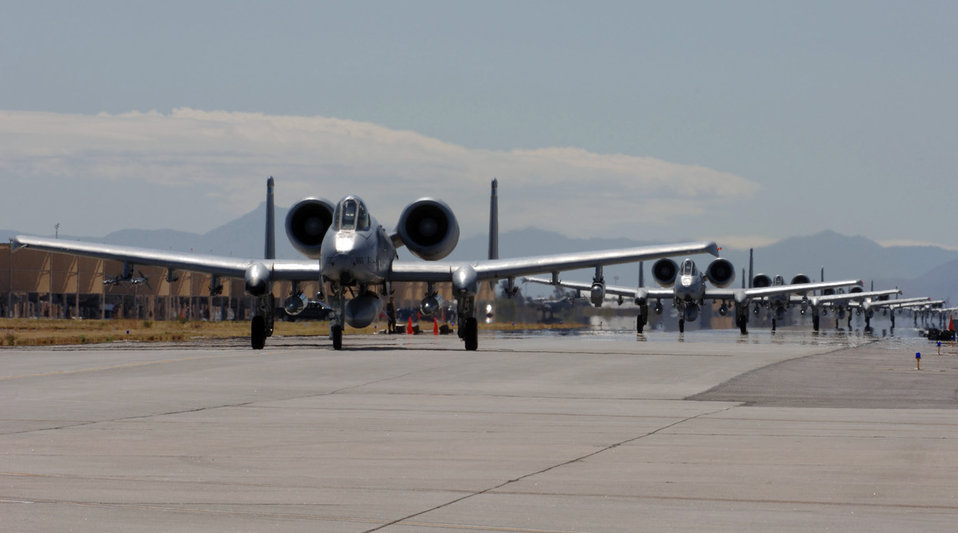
Exercise Bushwacker 06-02

A-10 Thunderbolt IIs line up for take-off as part of a simulated deployment at Davis-Monthan Air Force Base, Ariz., on Saturday, April 1, 2006.